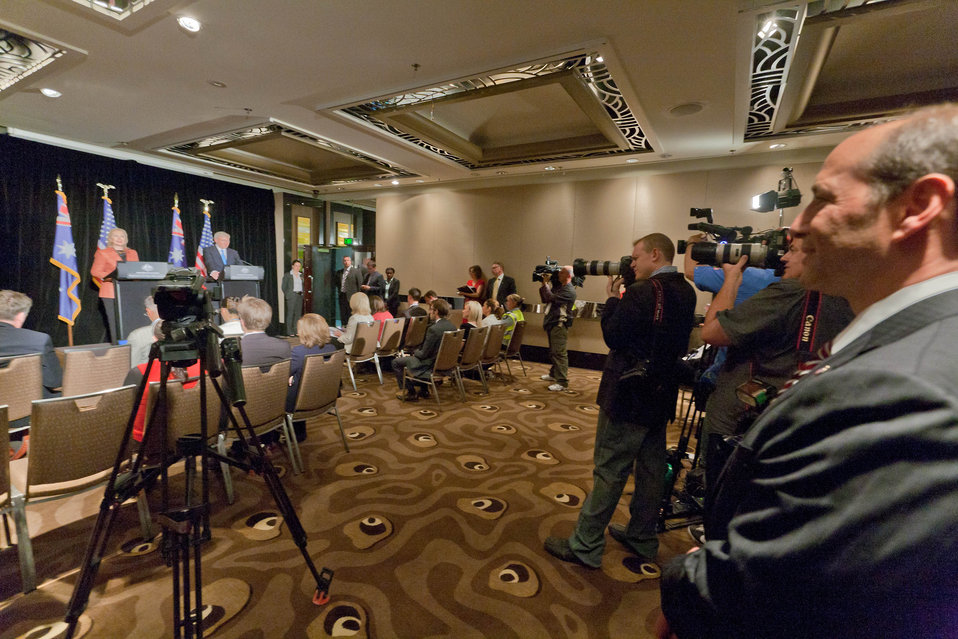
Ambassador Bleich Views Secretary Clinton and Australian Foreign Minister Rudd's Joint Press Conference

U.S. Ambassador to Australia Jeff Bleich views U.S. Secretary of State Hillary Rodham Clinton and Australian Foreign Minister Kevin Rudd's joint press conference in Melbourne, Australia, on November 7, 2010.